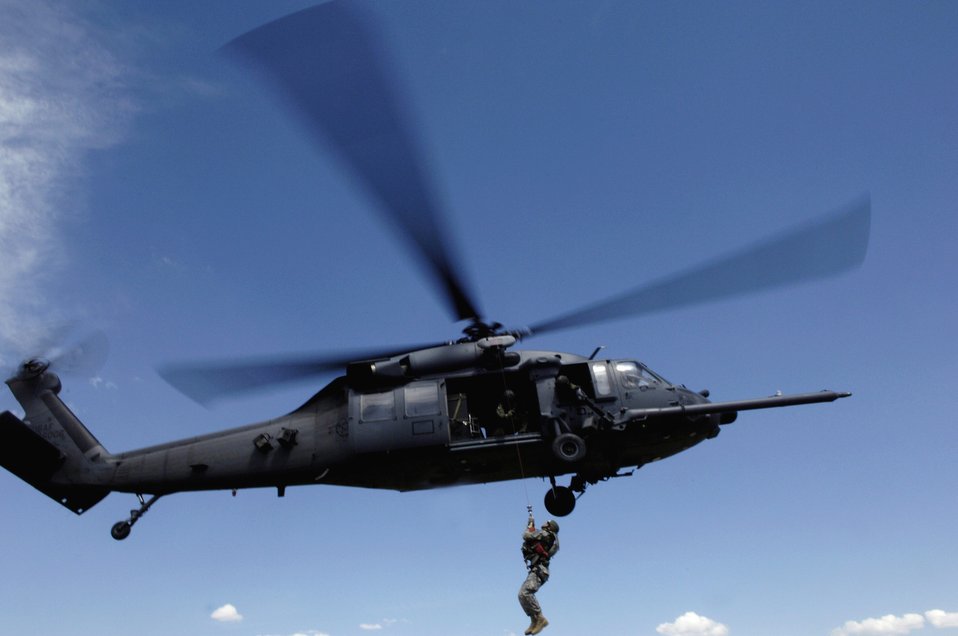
Search and rescue training

A Utah Army National Guard Soldier is lifted on board an Air Force HH-60 Pave Hawk over the Utah Test and Training Range May 3 during a combat search and rescue integration exercise held May 2 to 5 in Sandy, Utah. Members of the 34th Weapons Squadron from Nellis Air Force Base, Nev., led the search and recovery training. The objective of the exercise was to expand expertise and integration with Utah's 211th Aviation Group AH-64 Apache Joint Rotary Wing, 4th Fighter Squadron F-16 Fighting Falcon Striker assets, special operations forces and conduct extensive joint CSAR operations against surface-to-air threats.